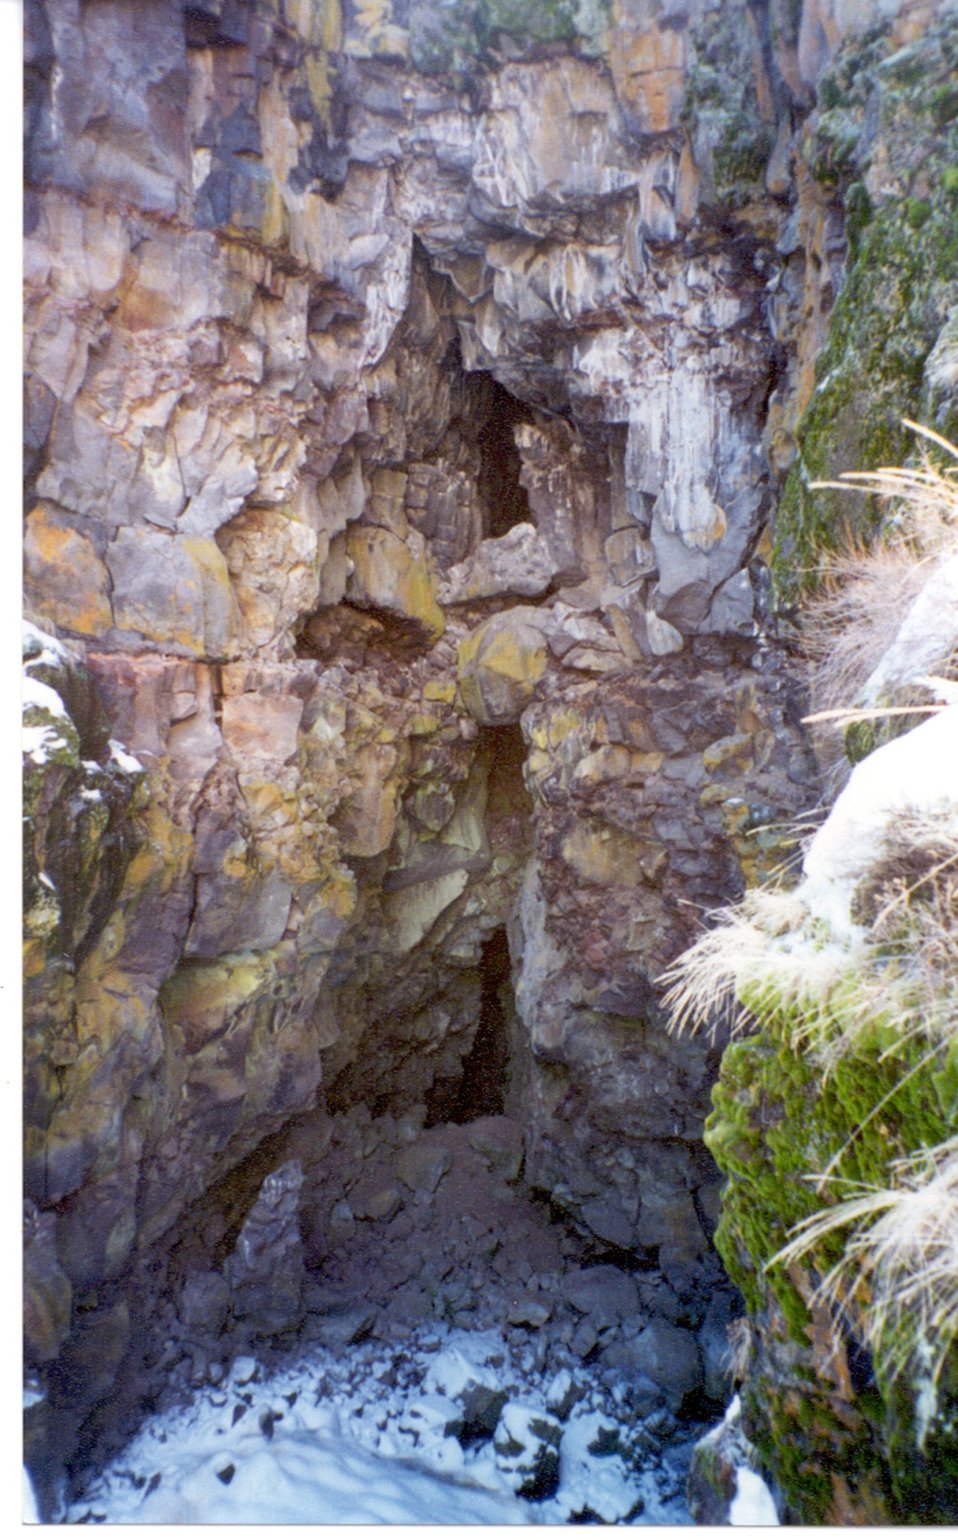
Kings Bowl Craters of the Moon Shoshone Field Office USRD Upper Snake River District